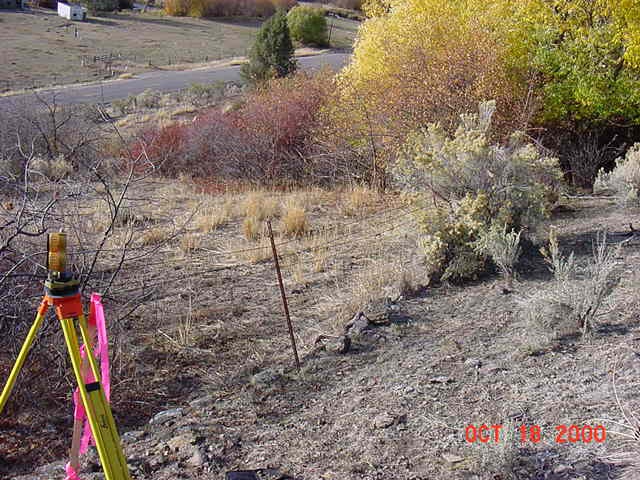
Cadastral Surveys Idaho Bureau of Land Management